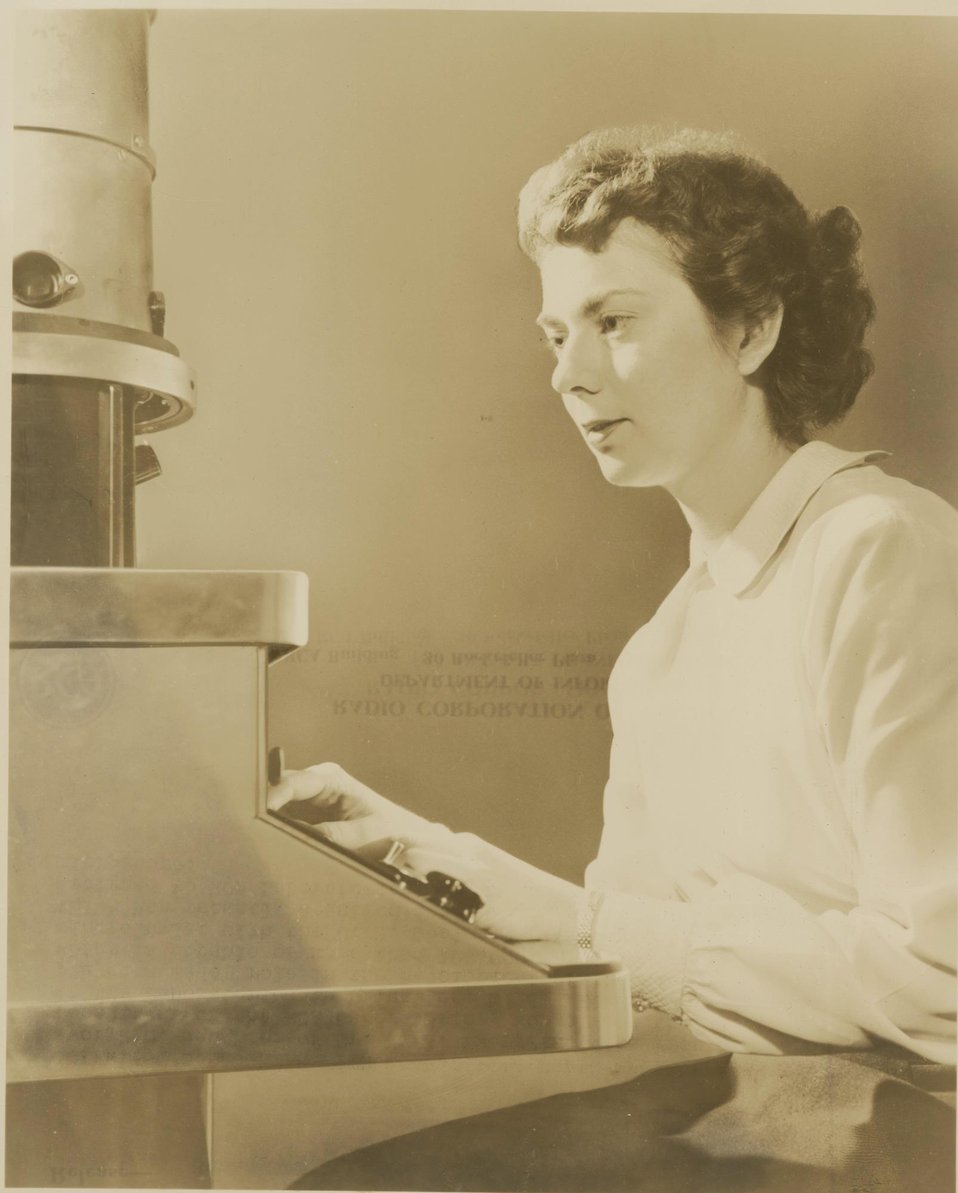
Photo of the Week: Women in STEM -- Elaine Zworykin

In celebration of Women’s History Month, the Department of Energy is honoring some of the nation's best and brightest women in the science, technology, engineering and math (STEM) community. In this 1949 photo, U.S. Geological Survey mineralogist Elaine Zworykin is shown with an electron microscope, a piece of technology developed by her father, Vladimir Zworykin. Elaine had been assigned to RCA laboratories to teach researchers how to use the microscope. | Photo courtesy of Smithsonian Institution Archives, Acc. 90-105 - Science Service, Records, 1920s-1970s.